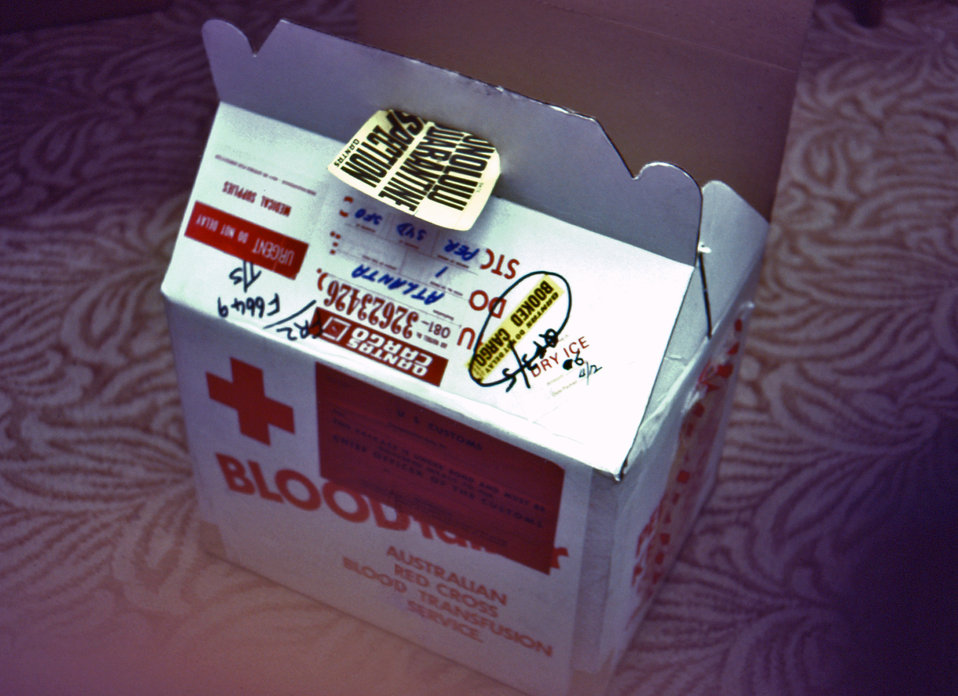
This photograph shows a container of American missionary nurse, Lily Pinneo's Lassa serum, which was collected after she recovered from a Lassa viral infection. Ms. Pinneo contracted the virus while in northern Nigeria in 1969.